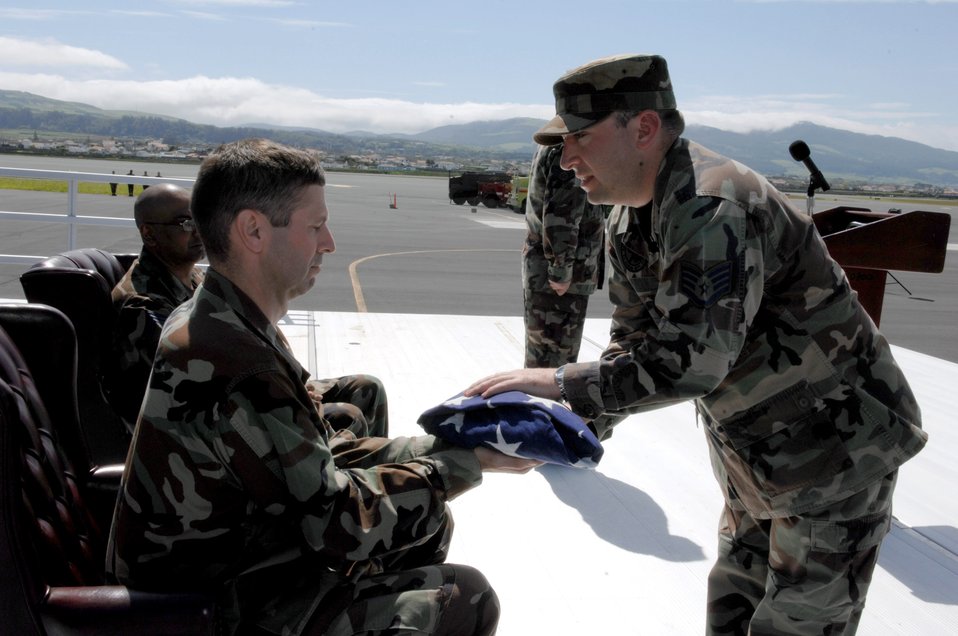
Azores' Alcohol Awareness Day puts partying in perspective

Staff Sgt. Chris Parodi presents Col. Jeffery Derrick with a flag symbolizing lives lost by fallen Airmen as a result of drunk driving. Colonel Derrick is vice commander of the 65th Air Base Wing at Lajes Field, Azores. Sergeant Parodi is NCO in charge of the Lajes honor guard.